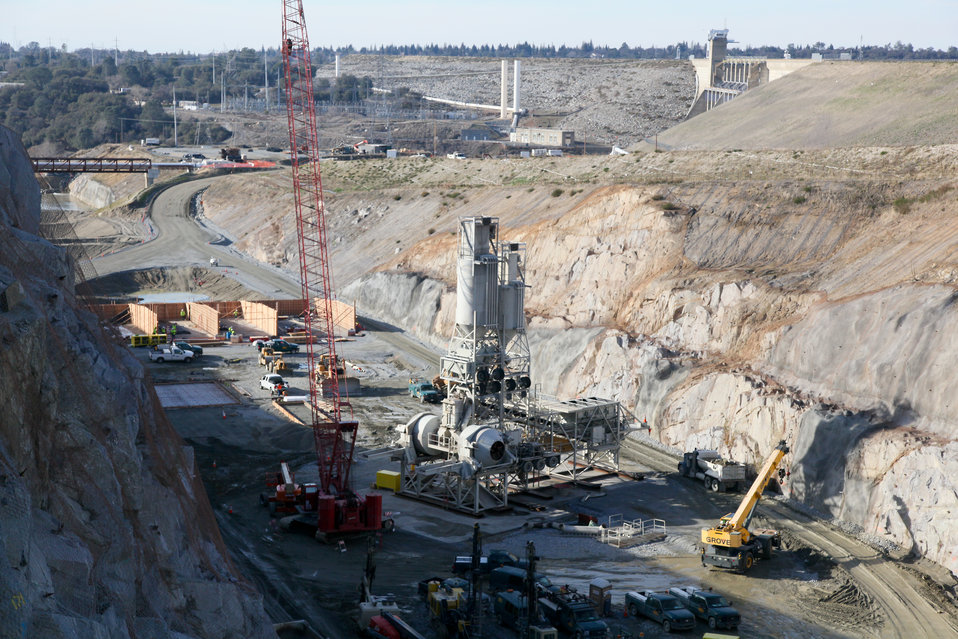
Concrete mixing equipment moves into the Folsom Dam auxiliary spillway

Workers complete the first stage of installing concrete mixing equipment for the new Folsom Dam auxiliary spillway in Folsom, Calif., Jan. 25, 2012. Paving is scheduled to begin in May, said U.S. Army Corps of Engineers Sacramento District project engineer Larry Smith. The spillway will allow Folsom Dam to release water sooner and more safely. The project is part of the Folsom Dam Joint Federal Project, a joint effort of the U.S. Army Corps of Engineers Sacramento District, the U.S. Bureau of Reclamation, the Central Valley Flood Protection Board and the Sacramento Area Flood Control Agency to improve the safety of the dam and reduce flood risk for the greater Sacramento area.